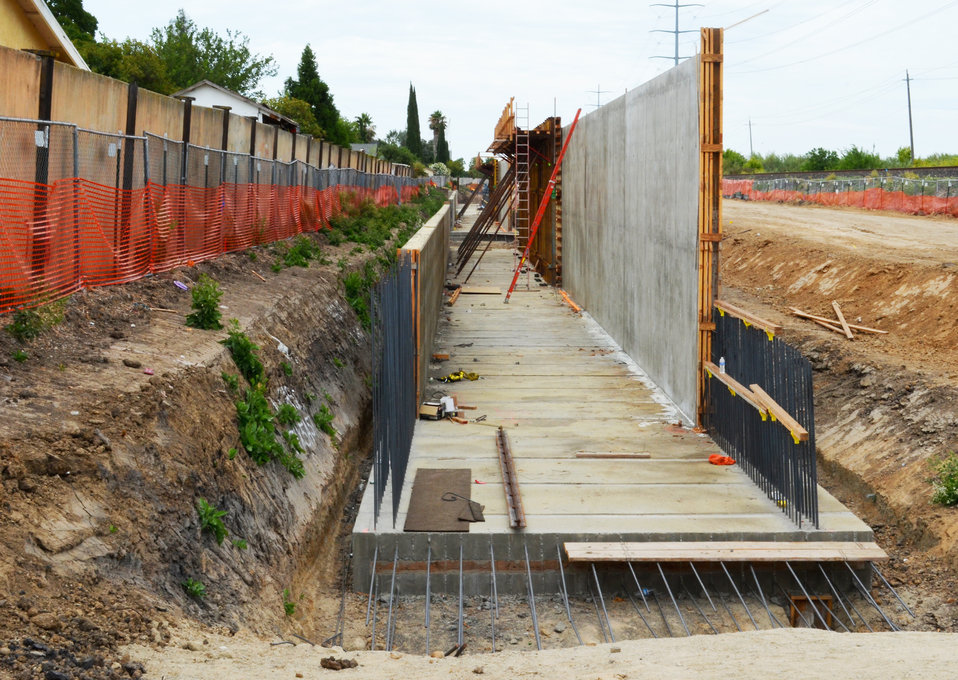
Morrison Creek flood wall July 19, 2012

Contractors for the U.S. Army Corps of Engineers Sacramento District continue construction July 19, 2012, on a new concrete flood wall along Morrison Creek in south Sacramento, Calif. The 3,300-foot-long flood wall will extend an existing flood wall, further reducing flood risk in the area, and eventually house a potable water line for Sacramento. The work is a joint effort between the Corps, the Central Valley Flood Protection Board and the Sacramento Area Flood Control Agency. Completion is scheduled for 2013.